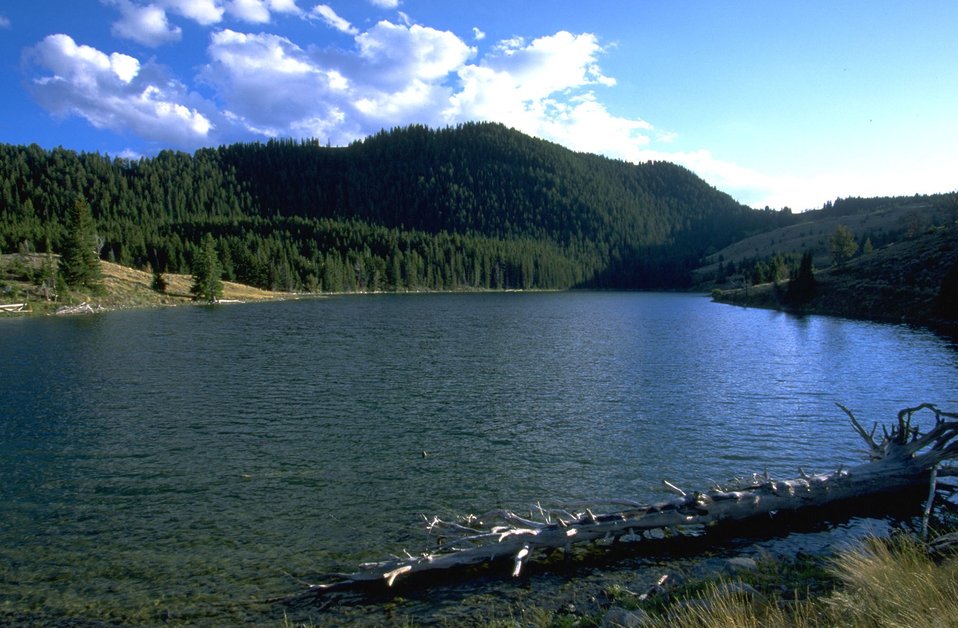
Lake containing a dead tree